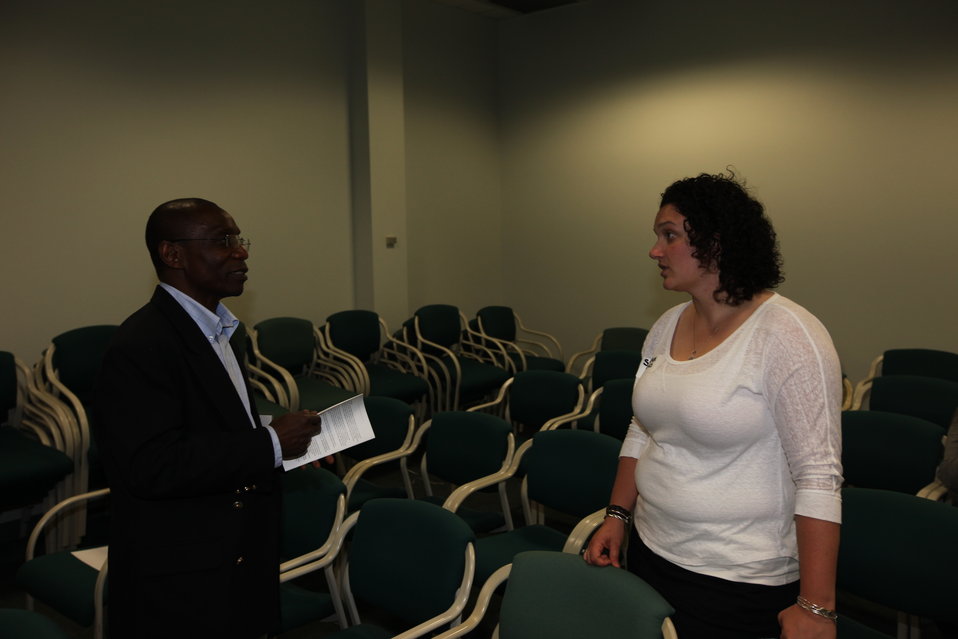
Northeast Region Employee Appreciation Awards